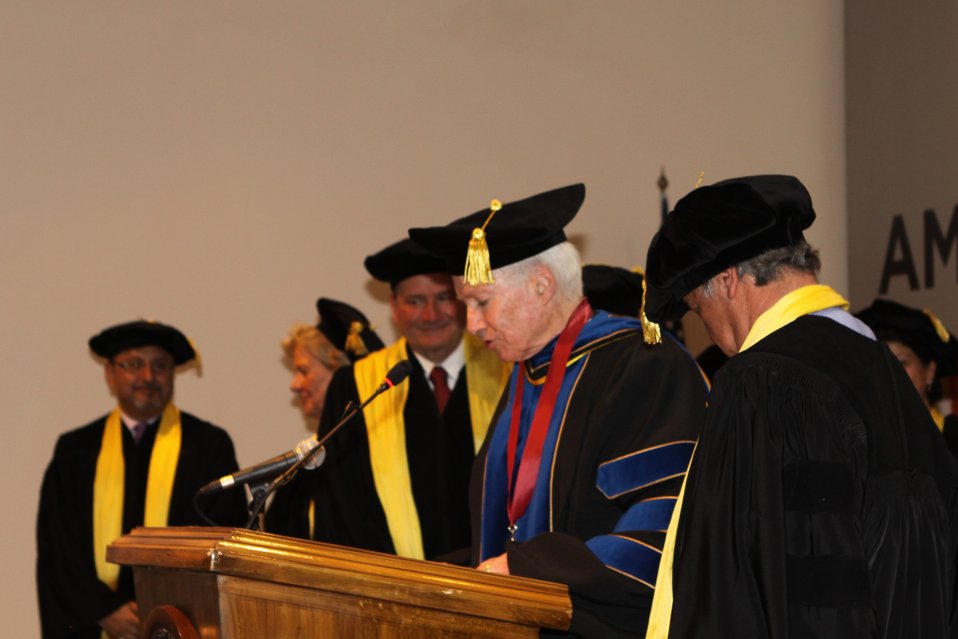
100526 AUAF Graduation 233